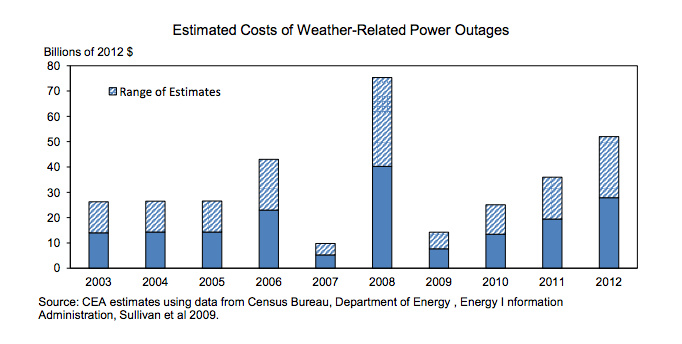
Estimated Cost of Weather-Related Power Outages

Source: CEA estimates using data from Census Bureau, Department of Energy , Energy I nformation
Administration, Sullivan et al 2009.